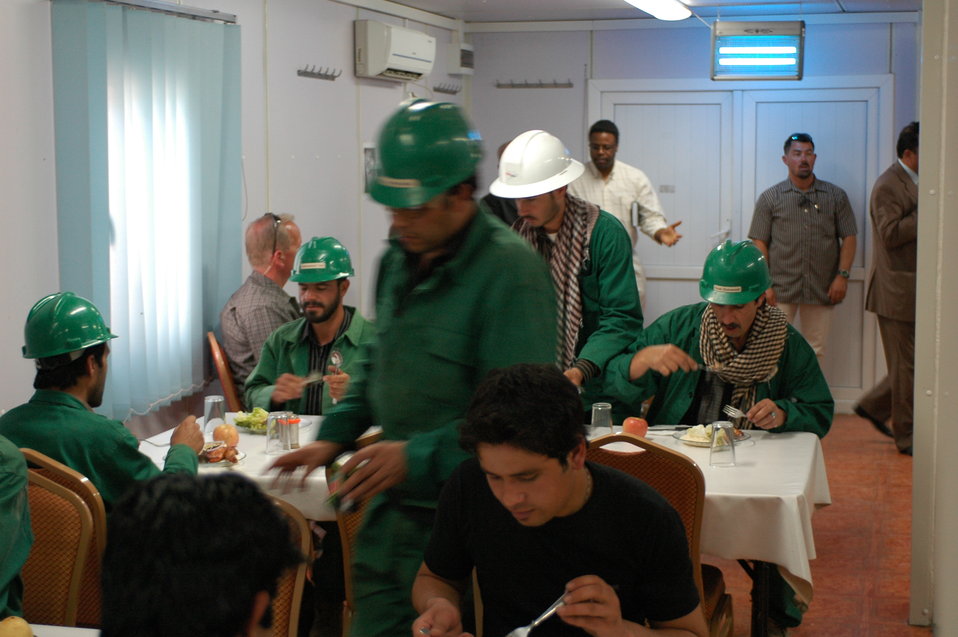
105 MW Tarakhil Power Plant Handover